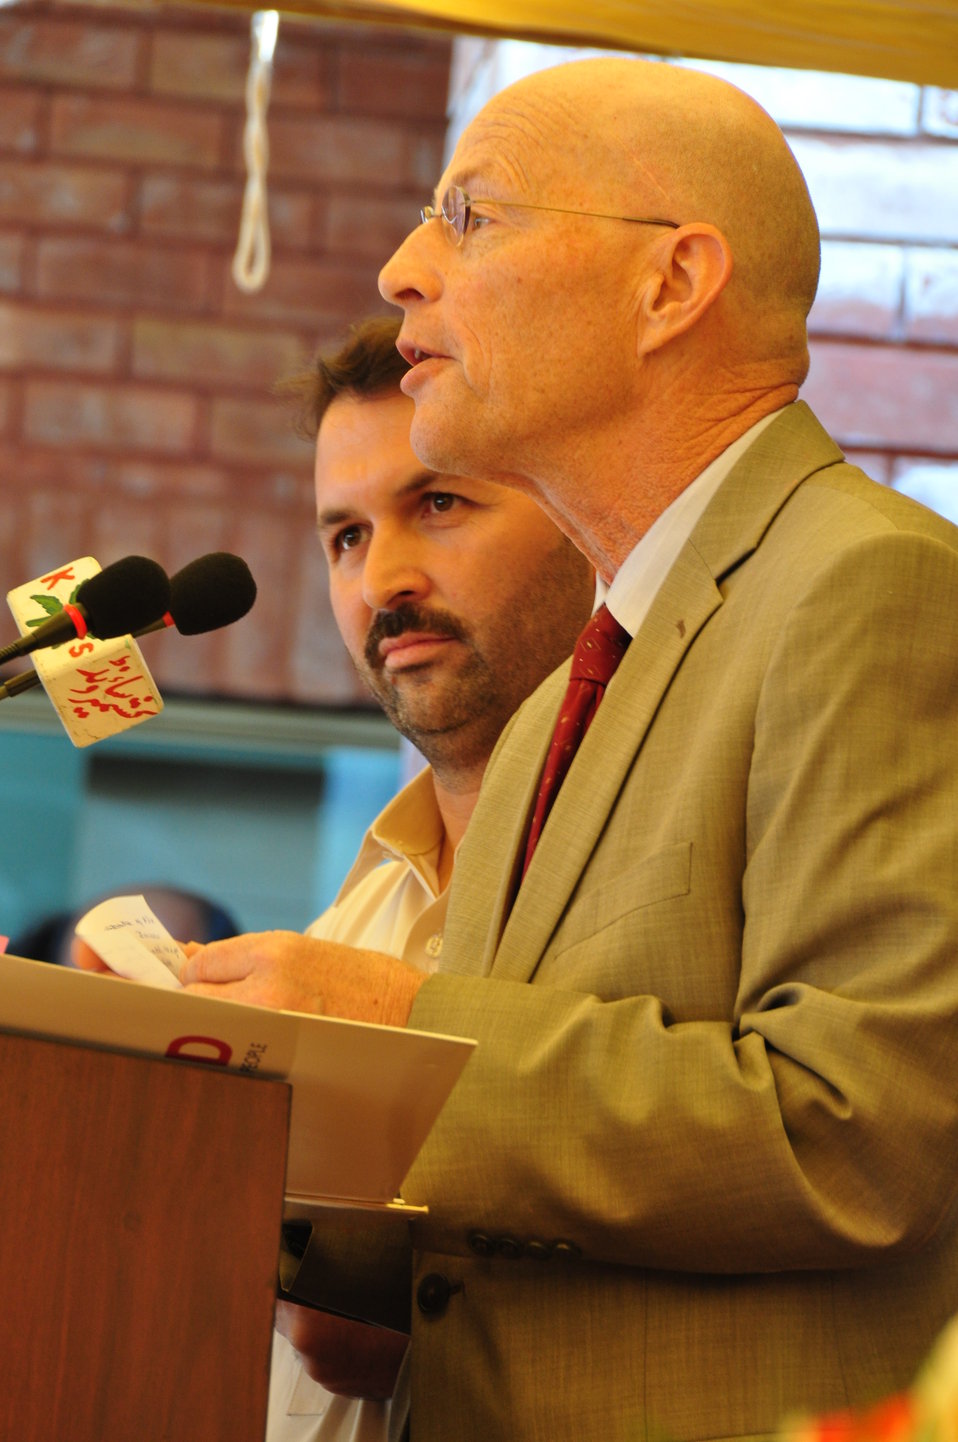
Dhirkot Reconstructed Hospital Inauguration Pakistan Reconstruction Program 07